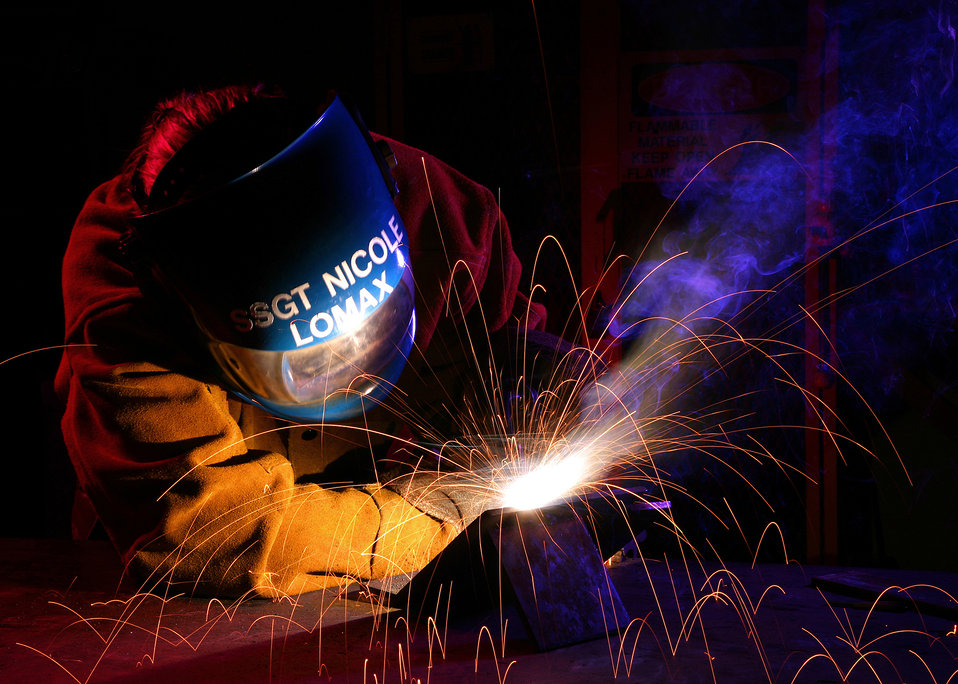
Spark-ling day

Staff Sgt. Nicole Lomax uses a metal inert gas welding machine to weld a T-joint for her skill level upgrade at Lackland Air Force Base, Texas. Sergeant Lomax is assigned to the Air Force Reserve Command's 433rd Airlift Wing at Lackland.